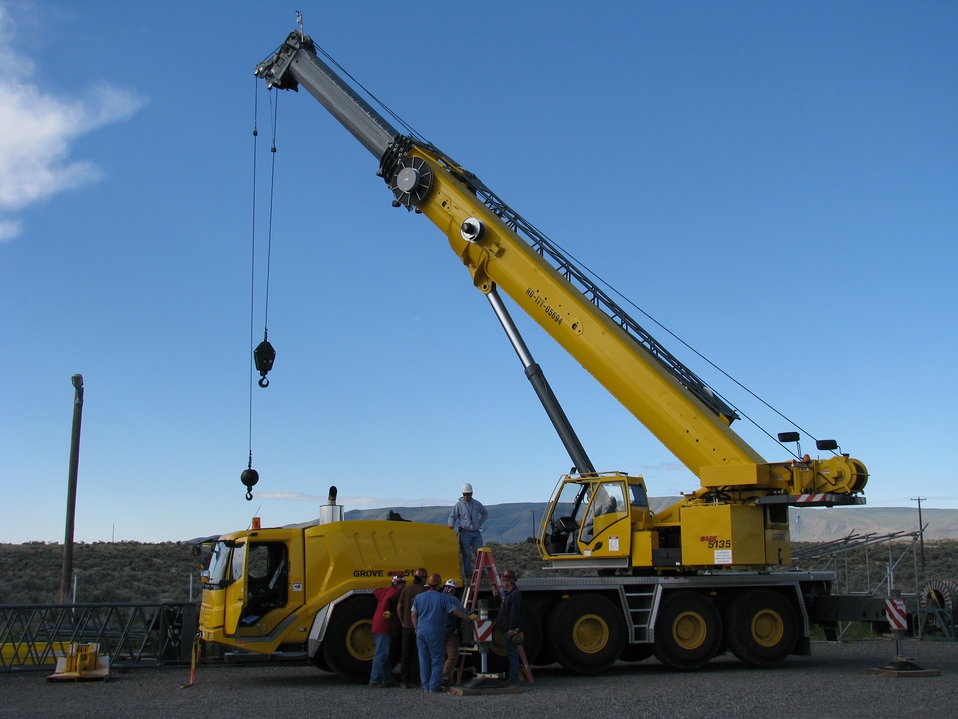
Recovery Act Funds Crane Provides Lift to Tank Waste Retrieval

A state-of-the-art, 135-ton all-terrain crane purchased with Recovery Act funds will provide a much-needed lift to waste retrieval efforts at Hanford.